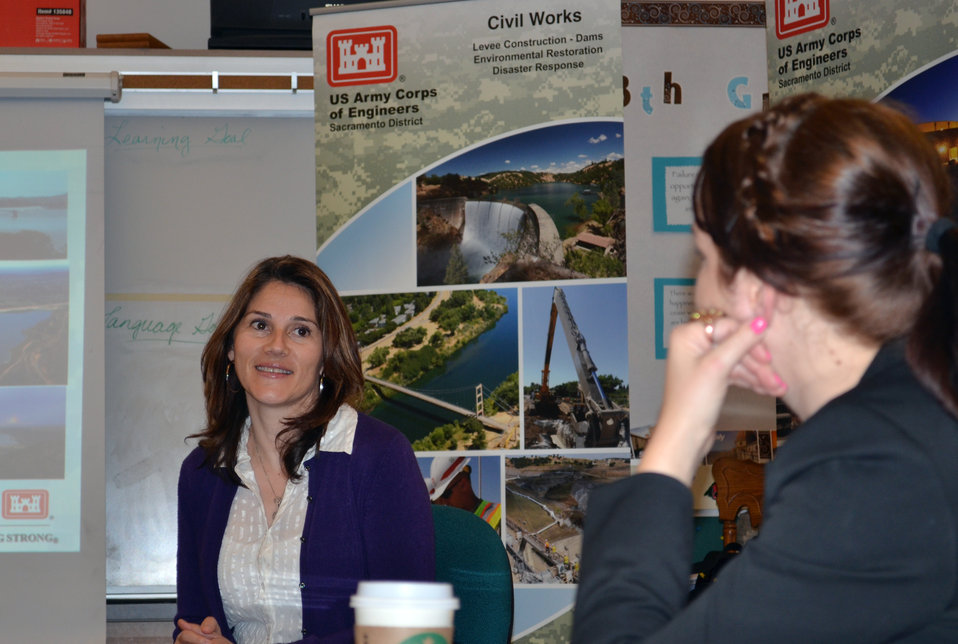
Engineer explains her craft at Cesar Chavez Youth Leadership Conference

Zeffy Ruvalcaba (left), a civil engineer with the U.S. Army Corps of Engineers Sacramento District, speaks to a student at the 12th Annual Cesar Chavez Youth Leadership Conference in Roseville, Calif., March 24, 2012. Ruvalcaba hosted a workshop during the event at Robert Cooley Middle School, and explained various engineering fields. She also outlined possible educational paths to earning an engineering degree. The conference targeted students in sixth through 12th grades and offered arts, education, health and job fairs; information on financial aid and scholarships; and hosted several recruiters from local colleges and universities.